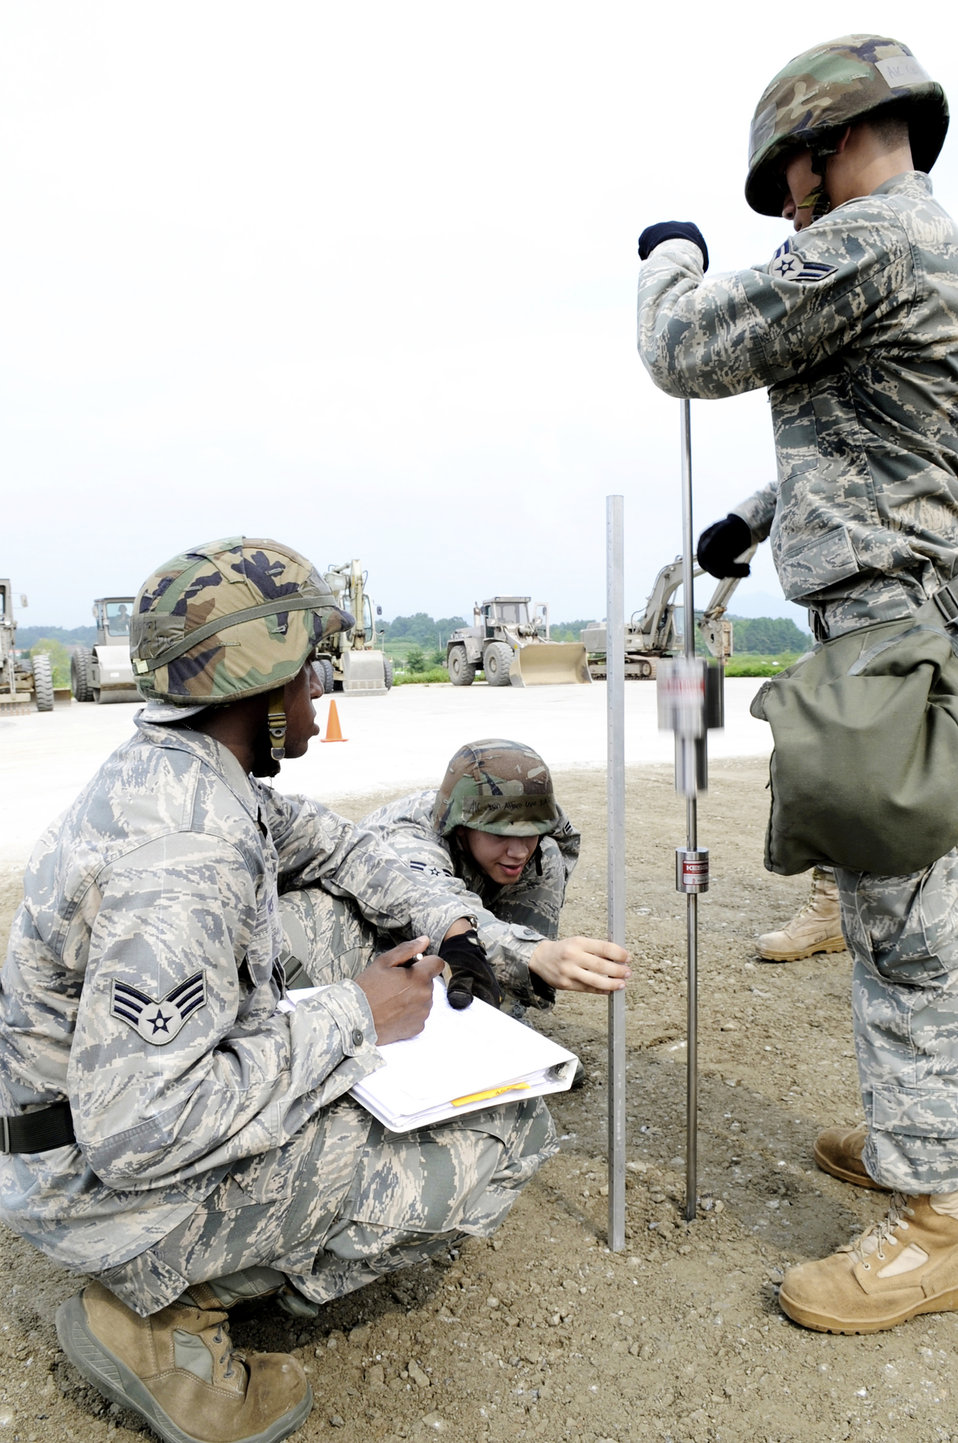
Osan AB's airfield damage repair team train with South Korean air force

(Left to right) Senior Airman Christopher Davis, Airman 1st Class Jason Alfaro and Airman 1st Class Chi Li test the compaction of a filled crater using a dynamic cone pentrometer Aug. 19 at Jungwon Air Base, Republic of Korea. The reading is used to determine if the crater is sufficiently filled and compacted to withstand aircraft landings. This process was part of a joint combined rapid runway repair training exercise with Airmen from the South Korean air force's 19th Tactical Fighter Wing and 91st Air Civil Engineer Group. Airmen Davis, Alfaro and Chi Li are assigned to the 51st Civil Engineer Squadron at Osan Air Base, South Korea.